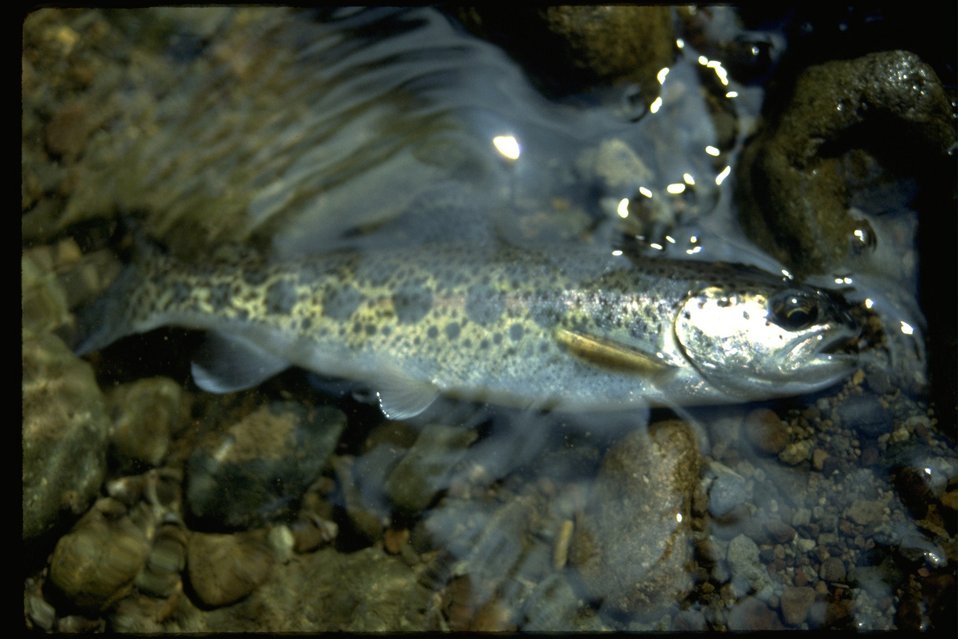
Macro shot of rainbow trout.